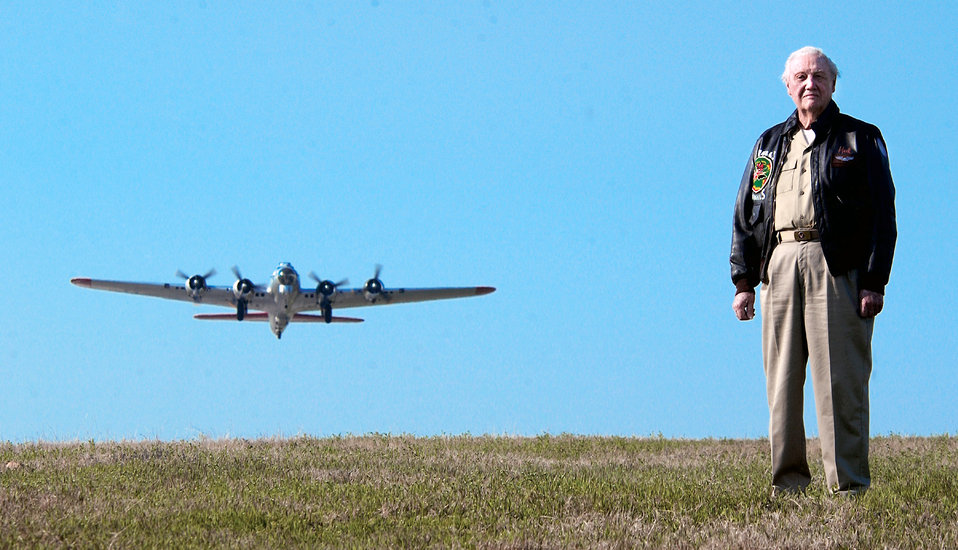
Living legends

TULSA, Okla. -- Retired Col. Harold Weekley was shot down in his B-17 Flying Fortress, like the one shown, over Le Manoir, France, on Aug. 13, 1944. His entire crew survived, and he was the first Airman in the 398th Bombardment Group to escape enemy territory. About 11,000 Allied aircraft were involved in the D-Day invasion -- 882 of those were B-17s.